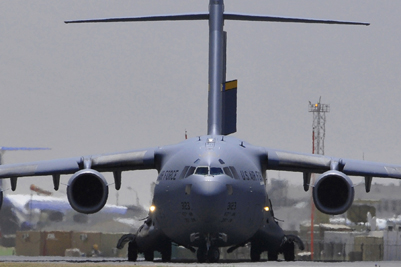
C-17 lands at Shindand for first time

A C-17 Globemaster III lands at Kabul International Airport June 1, 2011, in Kabul, Afghanistan. The C-17 recently landed for the first time at Shindand Air Base marking the first time the large military aircraft landed at the base since the refurbished runway opened in December 2010.